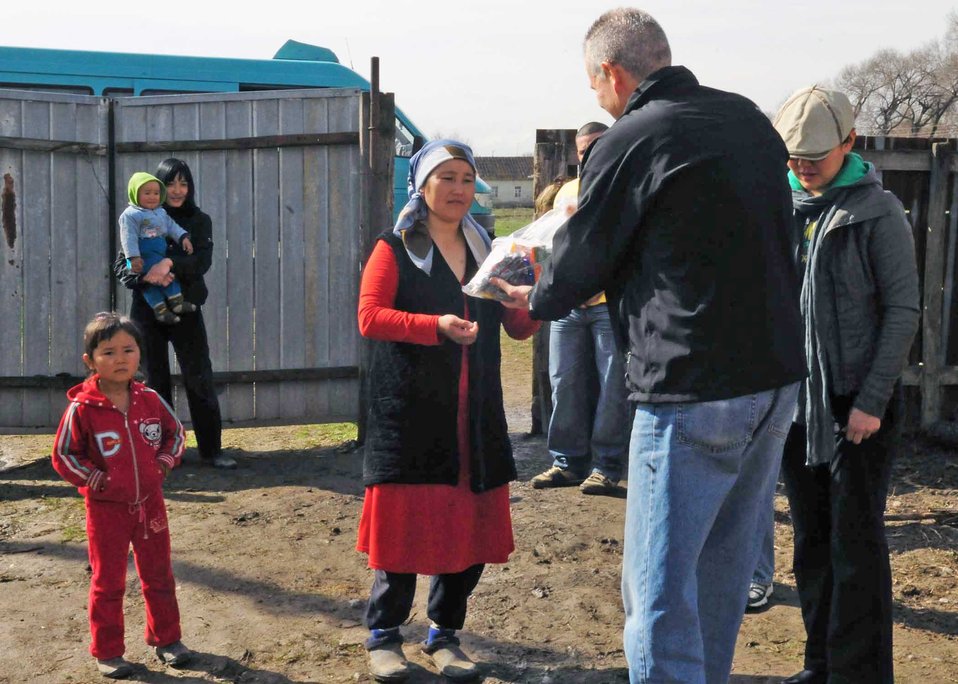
Manas Airmen deliver care packages to Kyrgyz villagers

Lt. Col. Rex Vanderwood delivers humanitarian assistance items collected from stateside bases and friends to a family March 18, 2010, in Manas Village, Kyrgyzstan. Colonel Vanderwood is the 376th Expeditionary Mission Support Group deputy commander.